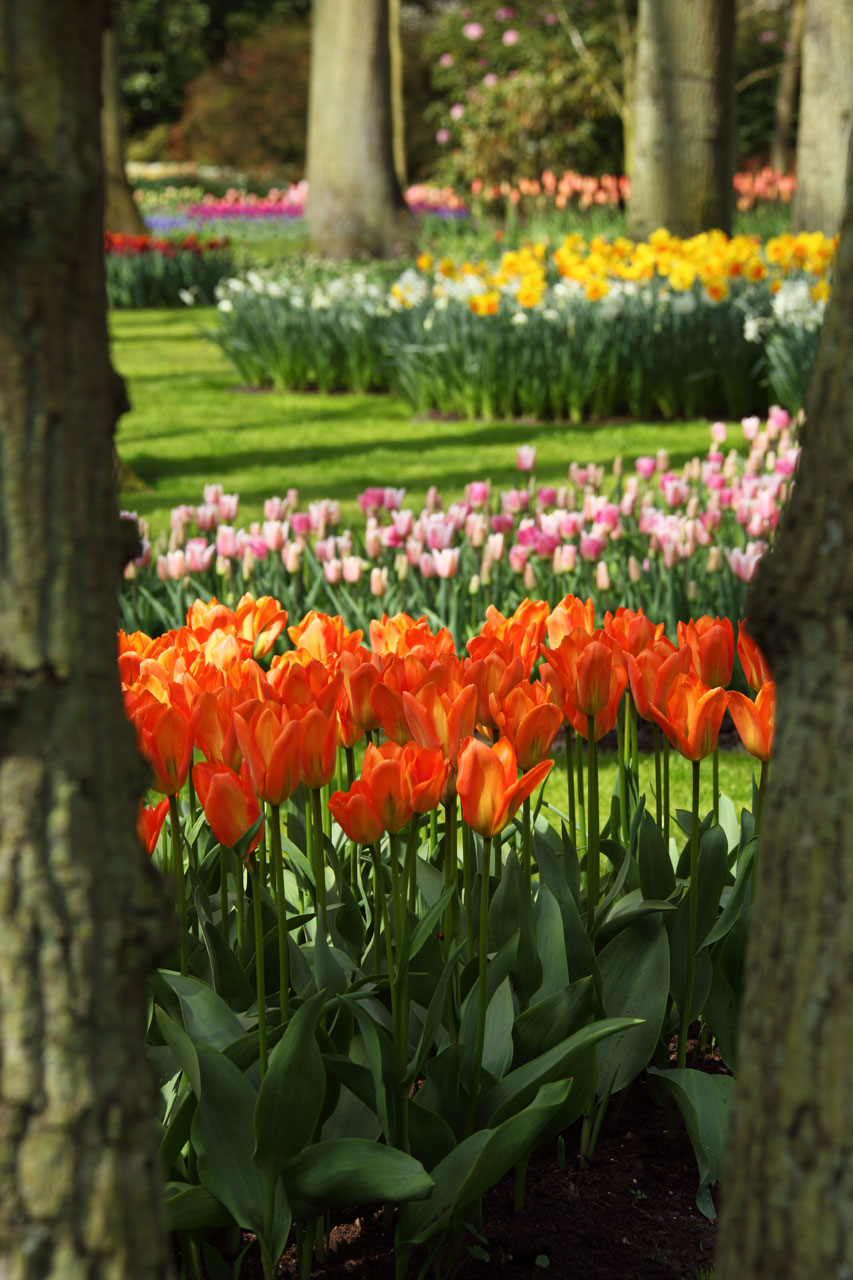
Keukenhof gardens

Flowers in keukenhof gardens.